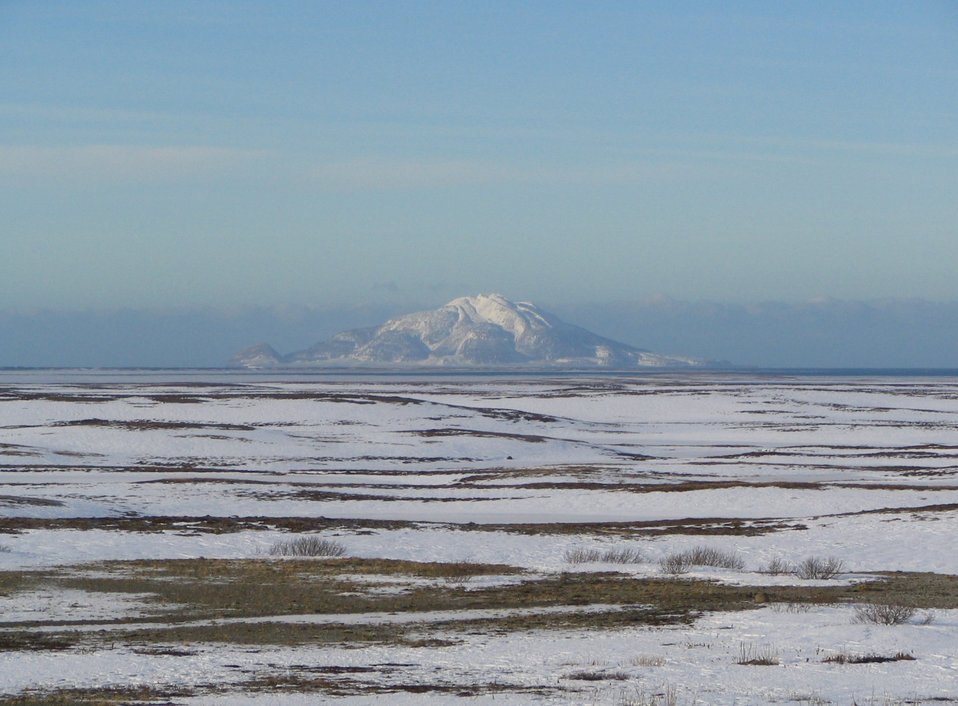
View of Amak Island

Izembek National Wildlife Refuge